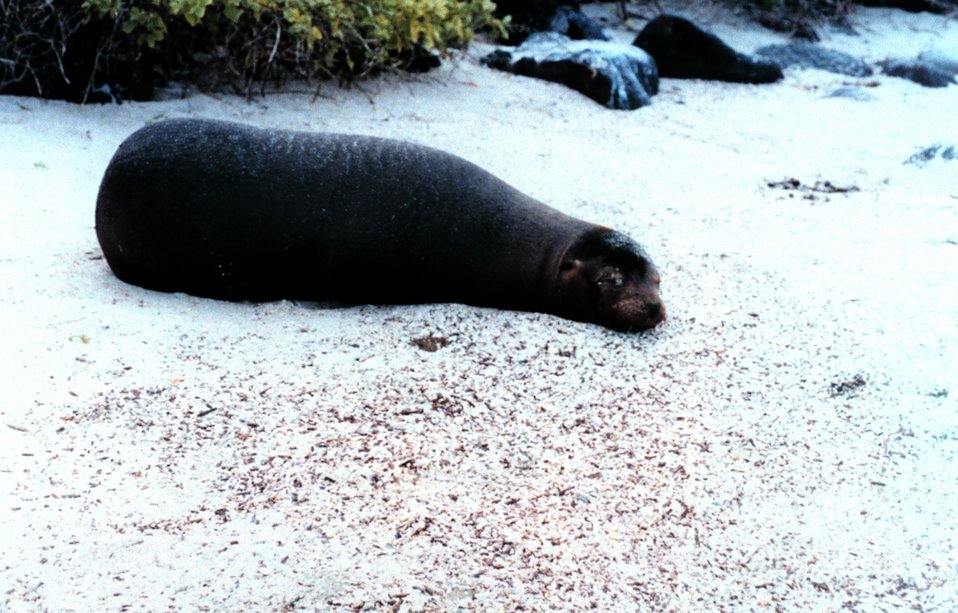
Galapagos sea lions - Zalophus californianus wollebacki.